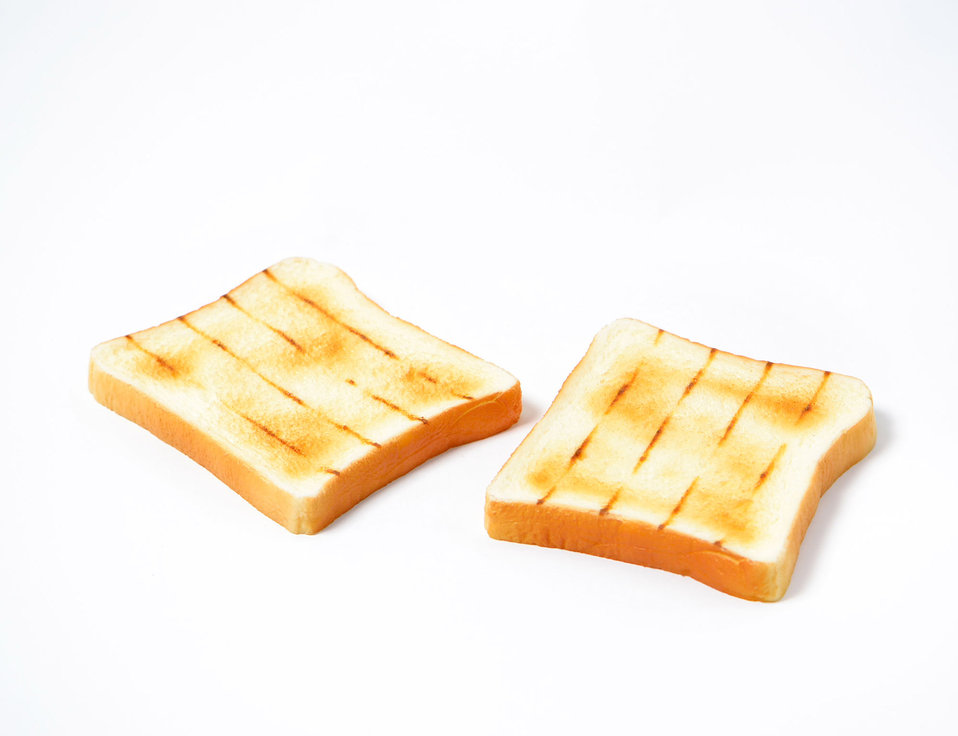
Slices of bread

Toaster,pop-up toaster,toast,slice,bread,food,white back,morning,lunch.